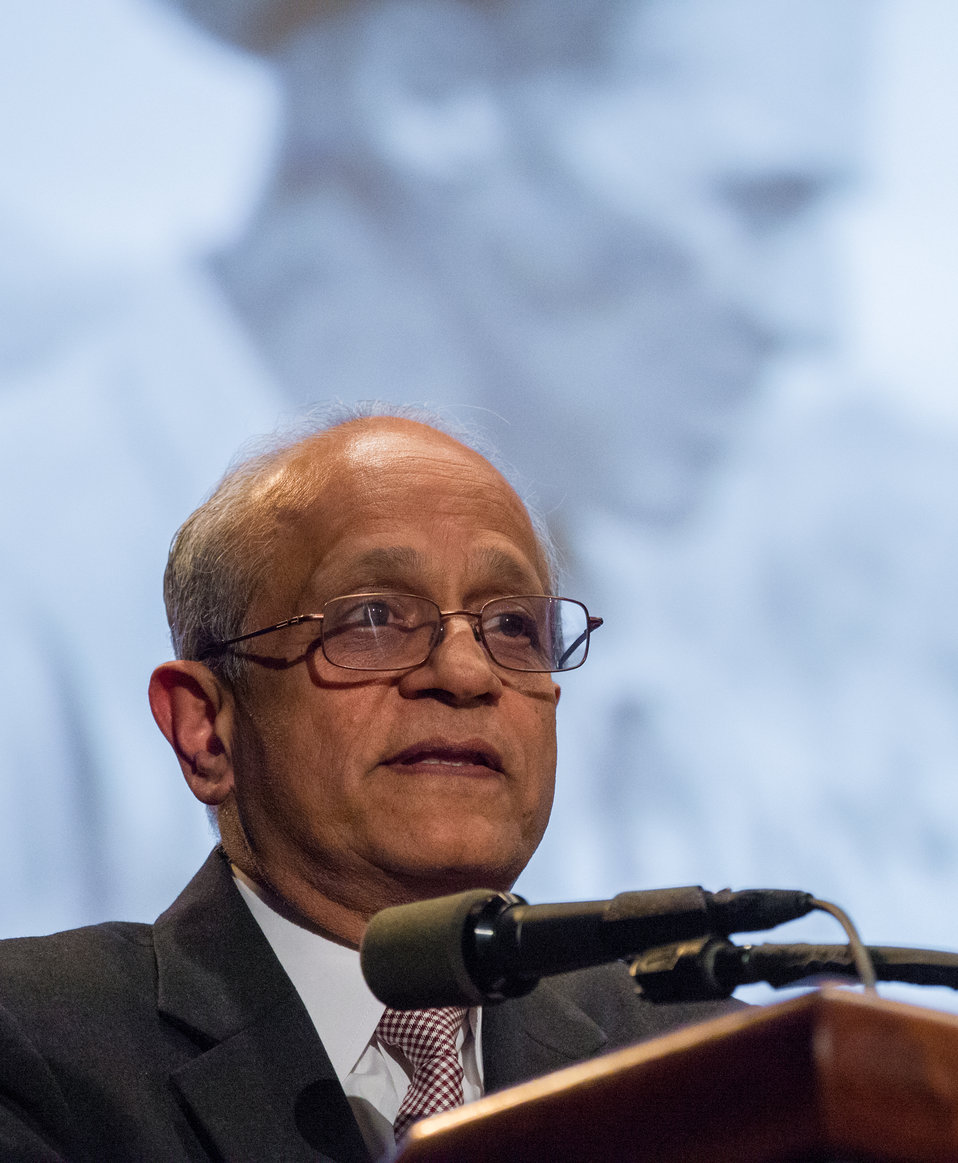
U.S. Department of Agriculture (USDA) National Institute of Food and Agriculture (NIFA) Director Sonny Ramaswamy adjourns the Borlaug Symposium commemorating the late Dr. Norman E. Borlaug's 100th Birthday hosted by USDA in the Jefferson Auditorium of USDA in Washington, D.C. on Tuesday, Mar. 25, 2014. The symposium highlighted current efforts addressing global hunger.